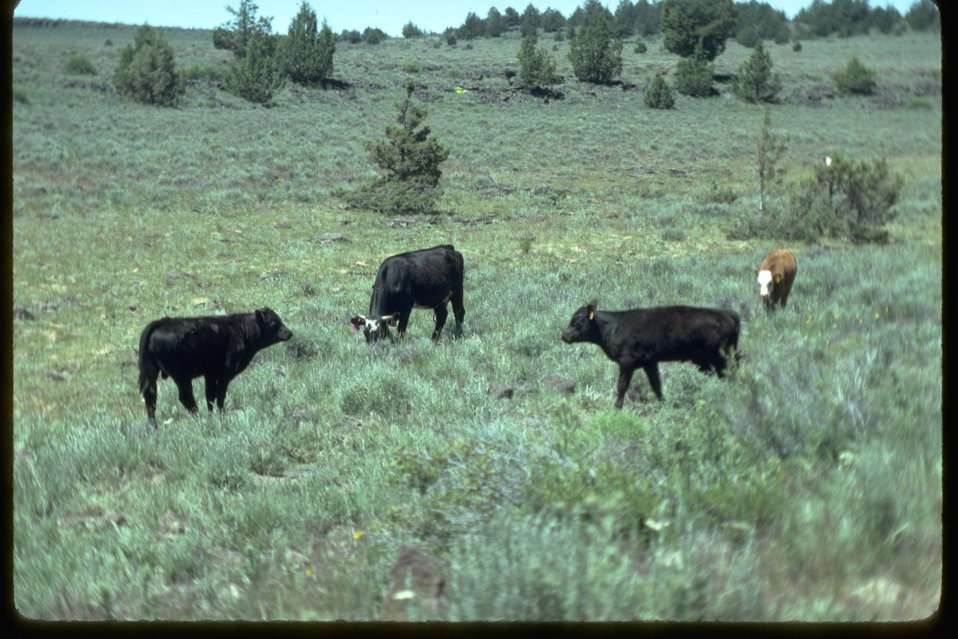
Livestock grazing in the South Steens area.